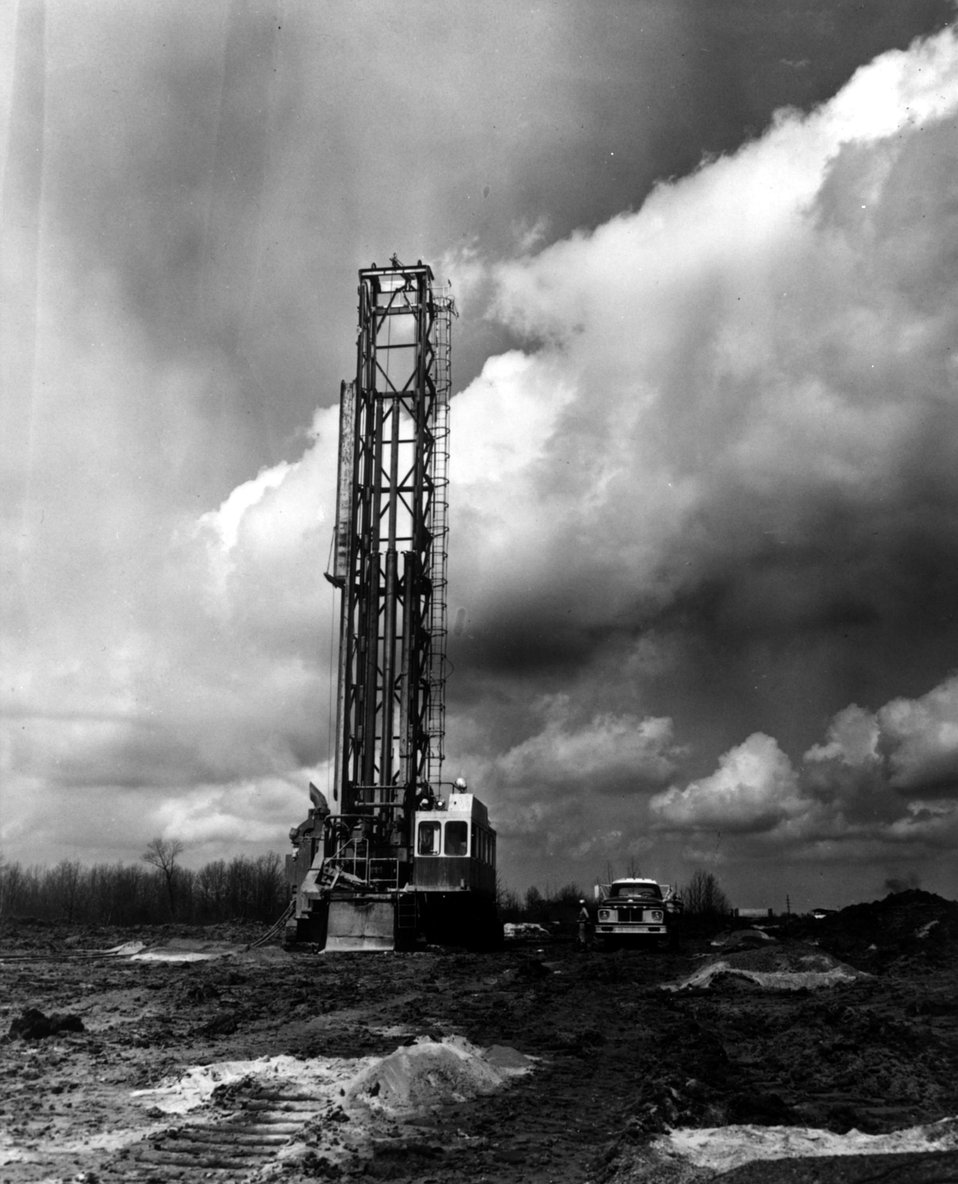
A vertical drill bores 12-inch holes in the earth and rock lying above a coal seam at a strip machine.
c.1970